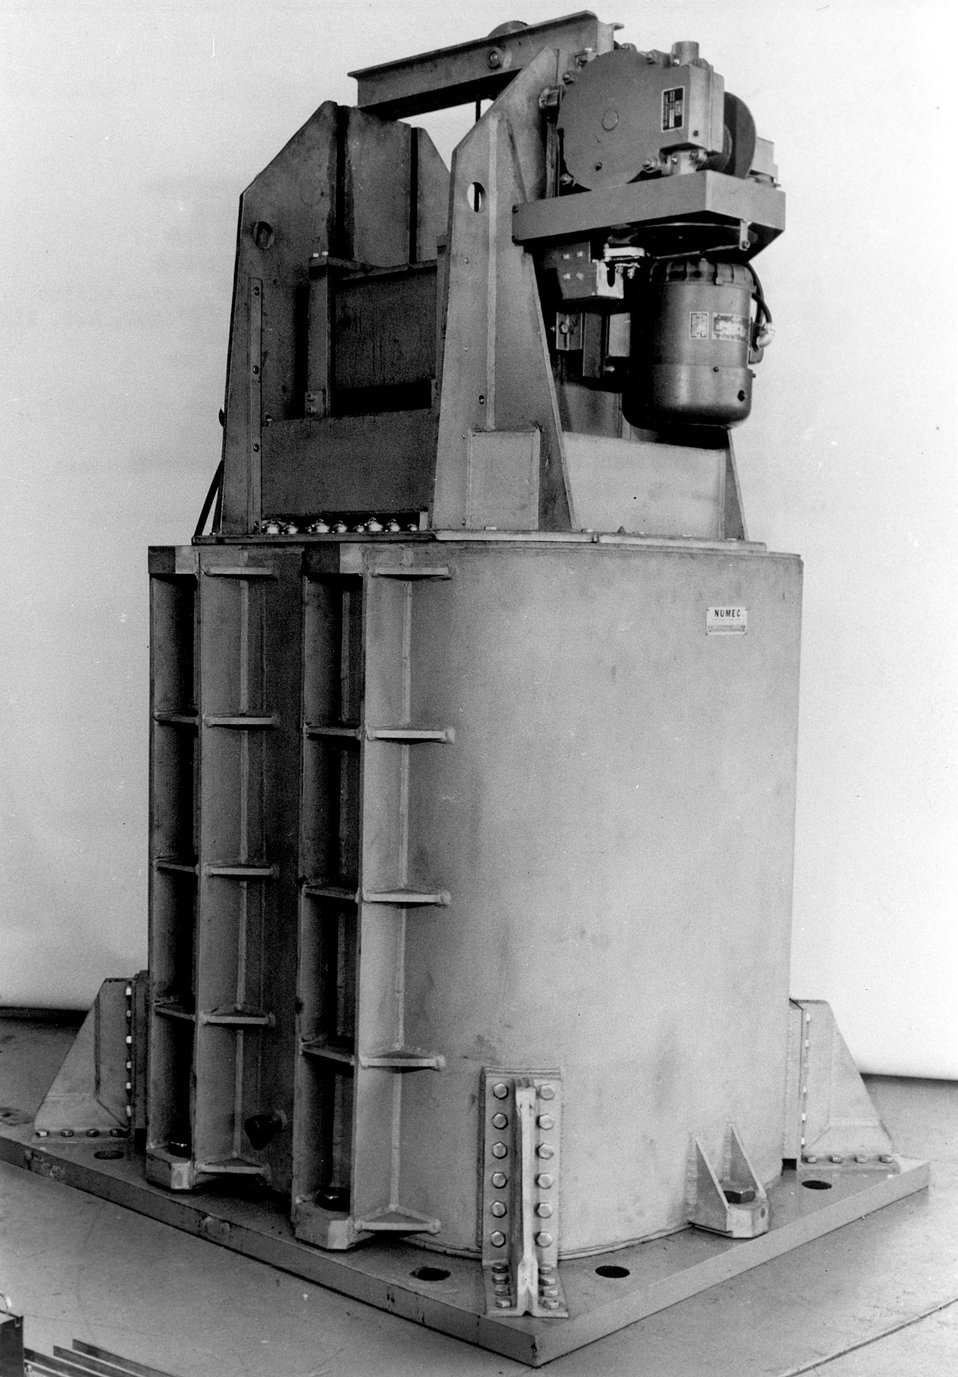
The feasibility of irradiating fish as a means of extending the commercial shelf-life has been demonstrated and the Food and Drug Administration has been petitioned to approve six species of irradiation-processed fish for human consumption. c. 1967